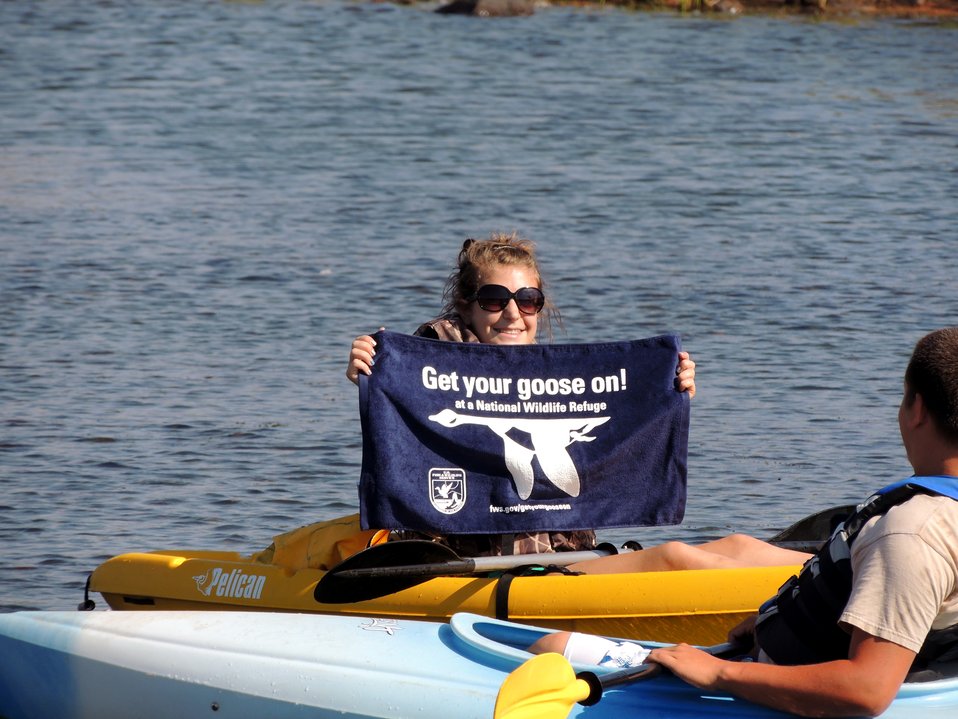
Get Your Goose On!

Wichita Mountains National Wildlife Refuge in Oklahoma.